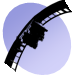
Dit is 'n figuurtje om te plaatsen op het nieuwe portaal ivm Attractieparken
nl:Categorie:Pictogram